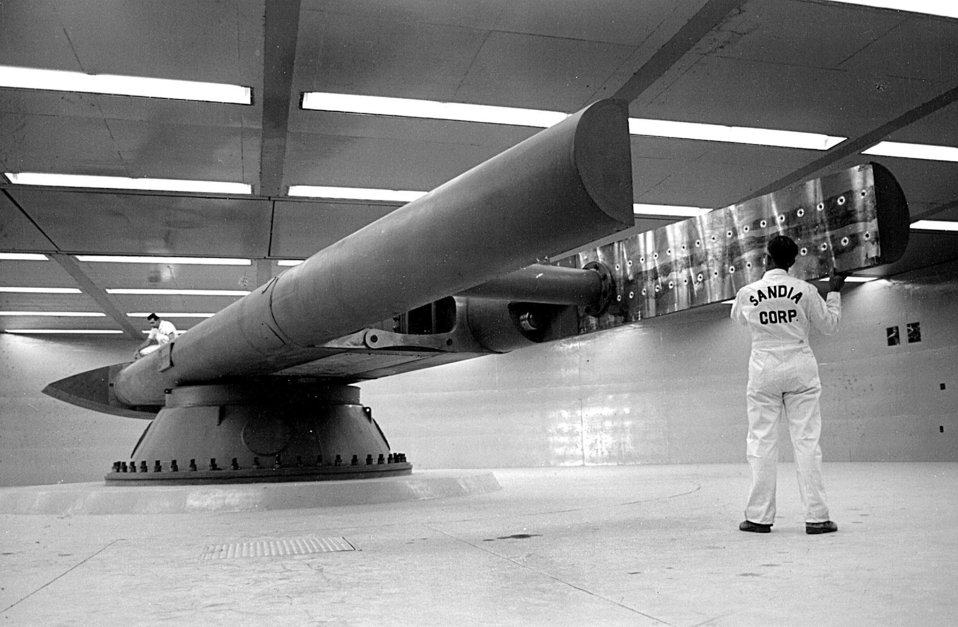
CENTRIFUGE TECHNOLOGY USED TO SIMULATE GRAVITY FOR RE-ENTRY SITUATIONS.

THIS AREA IS PART OF A TESTING FACILITY AT SANDIA NATIONAL LABORATORIES USED TO SIMULATE GRAVITY FOR RE-ENTRY SITUATIONS. TESTING IS DONE OF ALL KINDS OF DEVICES AND MATERIALS USED IN THE SPACE PROGRAM.